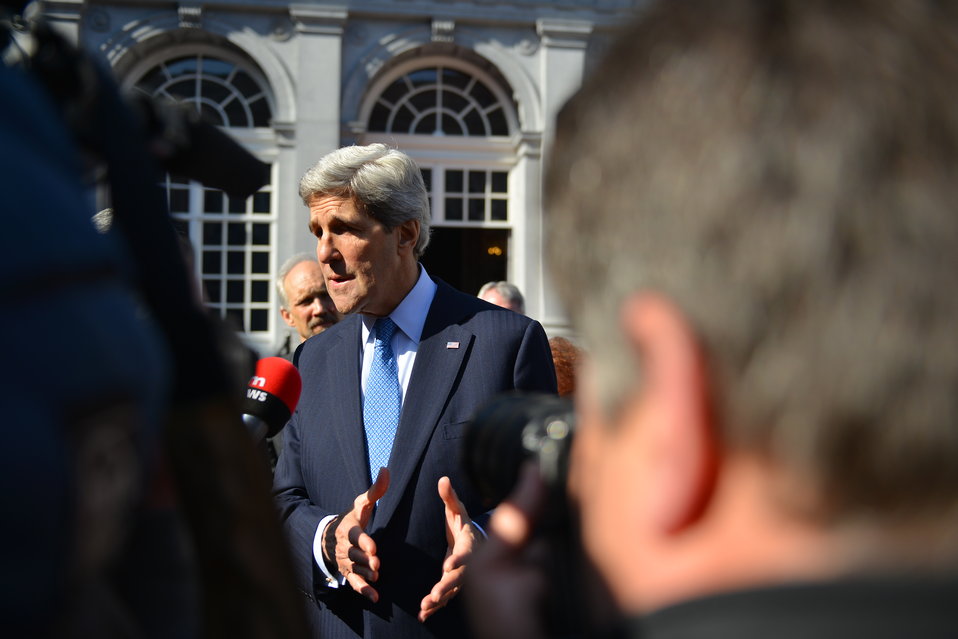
Secretary Kerry Takes Questions From Belgian TV

U.S. Secretary of State John Kerry takes questions from Belgian TV at Egmont Palace in Brussels, Belgium, on April 24, 2013.